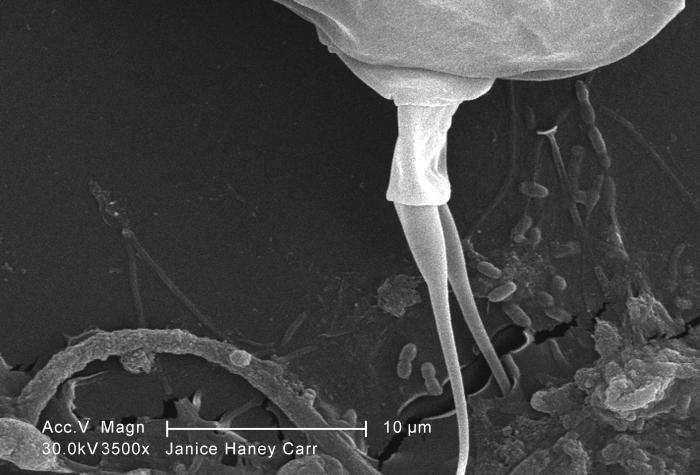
Under a moderate magnification of 3500X, this scanning electron micrograph (SEM) of an untreated water specimen extracted from a wild stream mainly used to control flooding during inclement weather, revealed the presence of unidentified organisms, which included bacteria, protozoa, and algae. In this particular view, the caudal end of a single copepod-like microorganism was seen occupying the field of view. Also, if you look closely towards the lower right corner, you'll also notice the small grouping of bacteria, which had become enmeshed in a patch of biofilm.